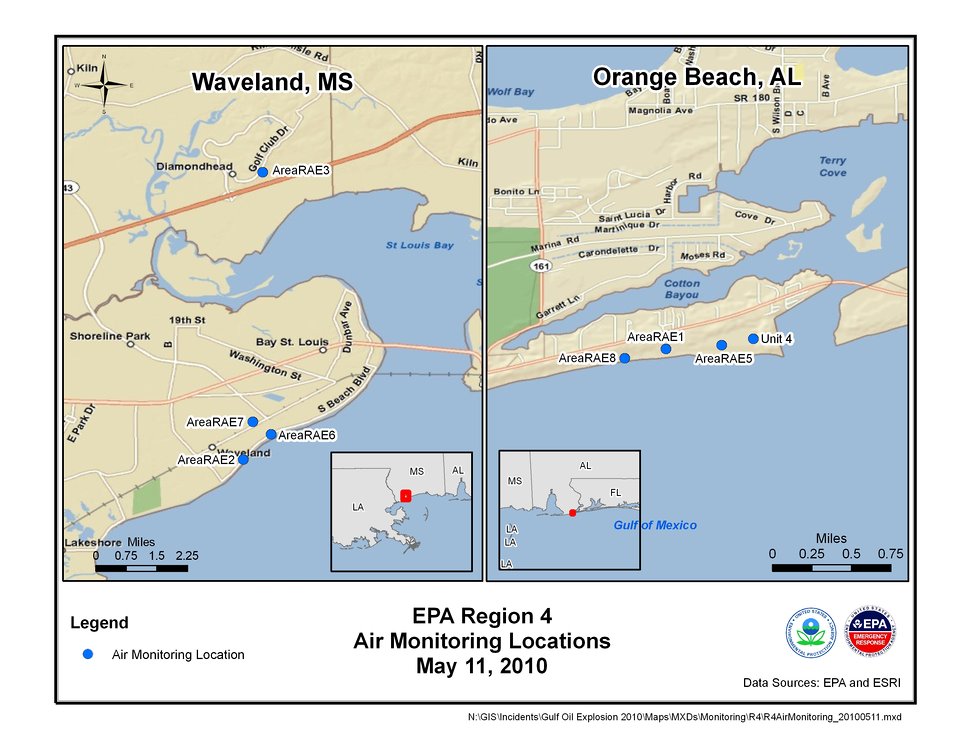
EPA Air Monitoring Locations May 11, 2010